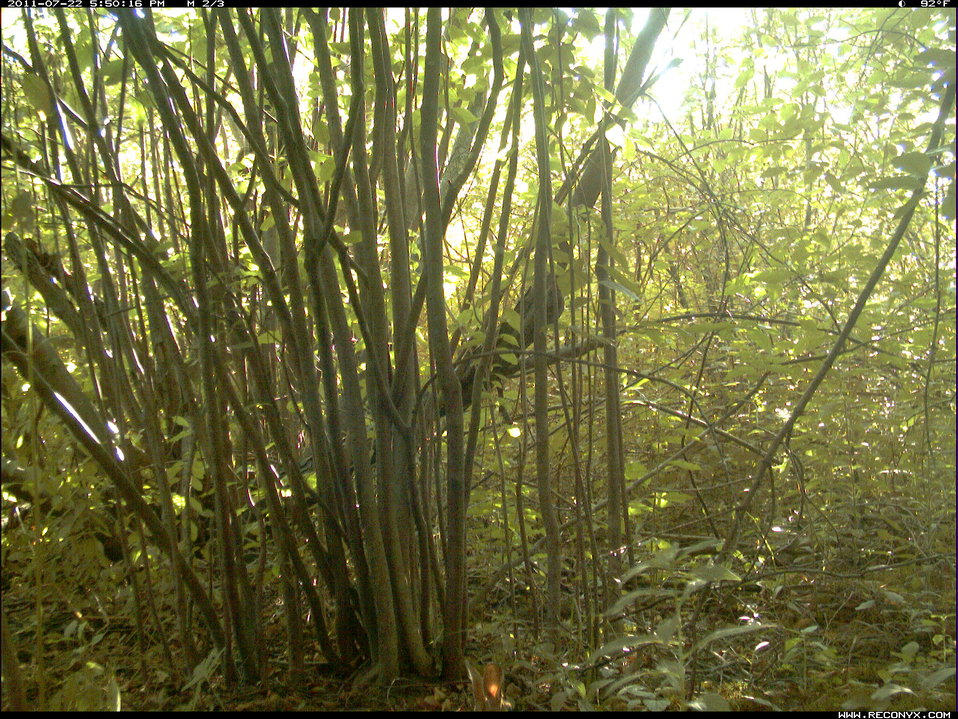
Rabbit

Can you find the Rabbit?